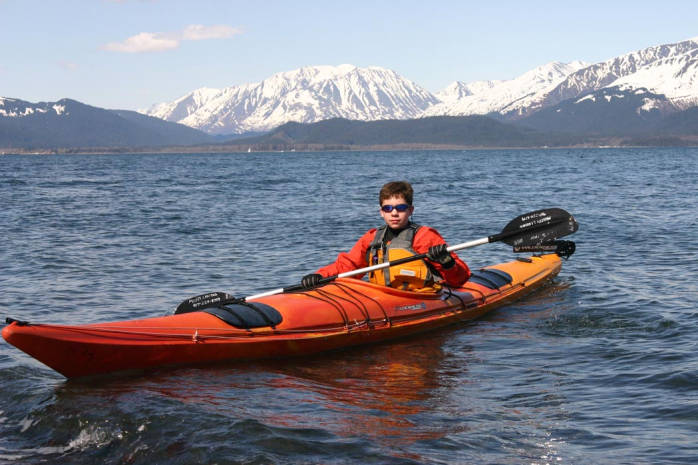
Boy Paddling in Kayak